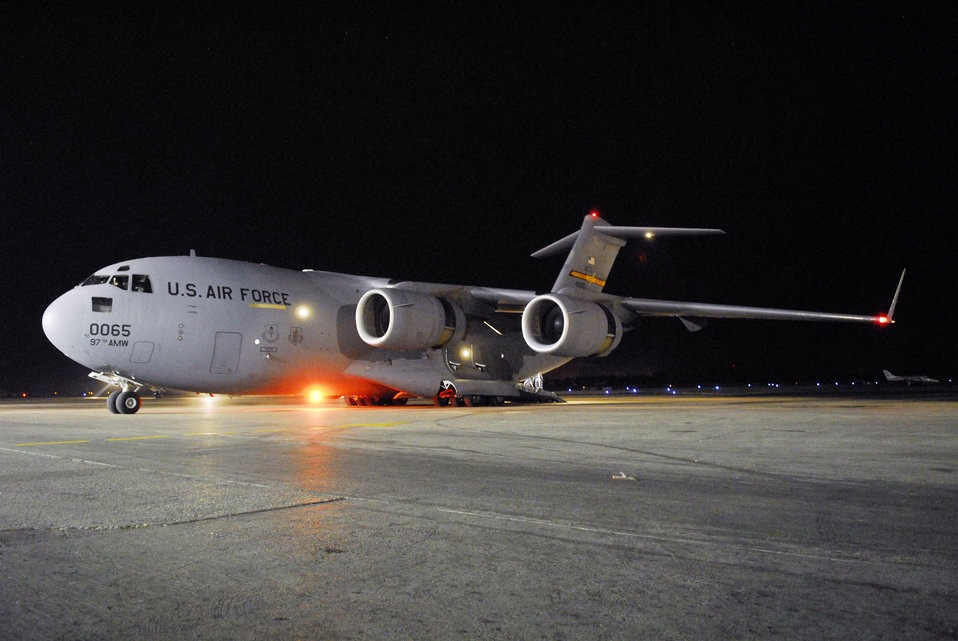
AMC provides airlift for Americans in Haiti

A C-17 Globemaster III waits to load passengers at Toussaint L'Ouverture International Airport in Port-au-Prince, Haiti, Jan. 19, 2010. The C-17, based out of Altus Air Force Base, Okla., was flown by three pilots with nearly 20,000 flight hours combined experience. Capt. Harold Kramer of the 58th Airlift Squadron was aircraft commander.